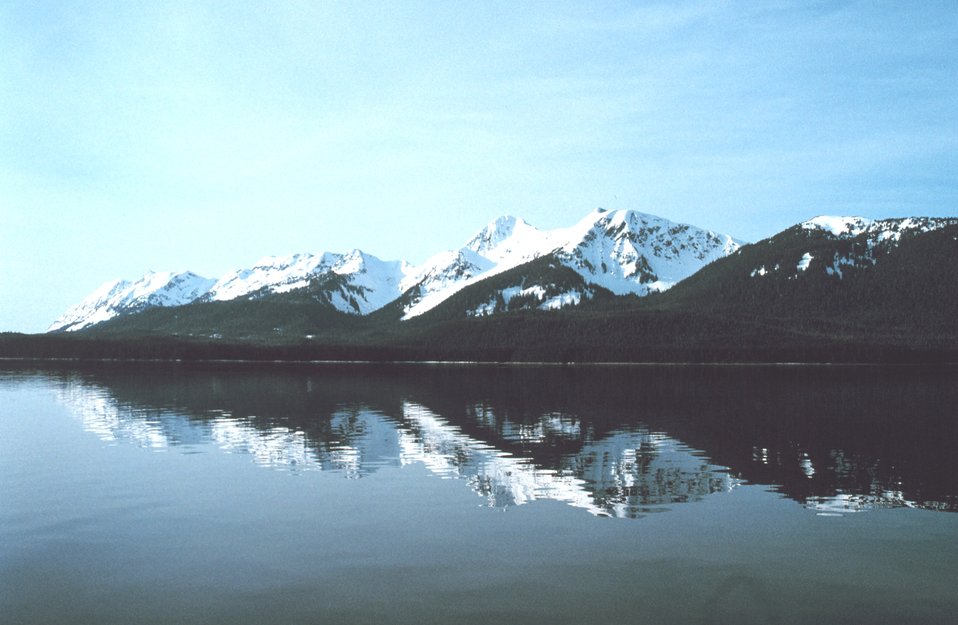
Reflections on a still morning